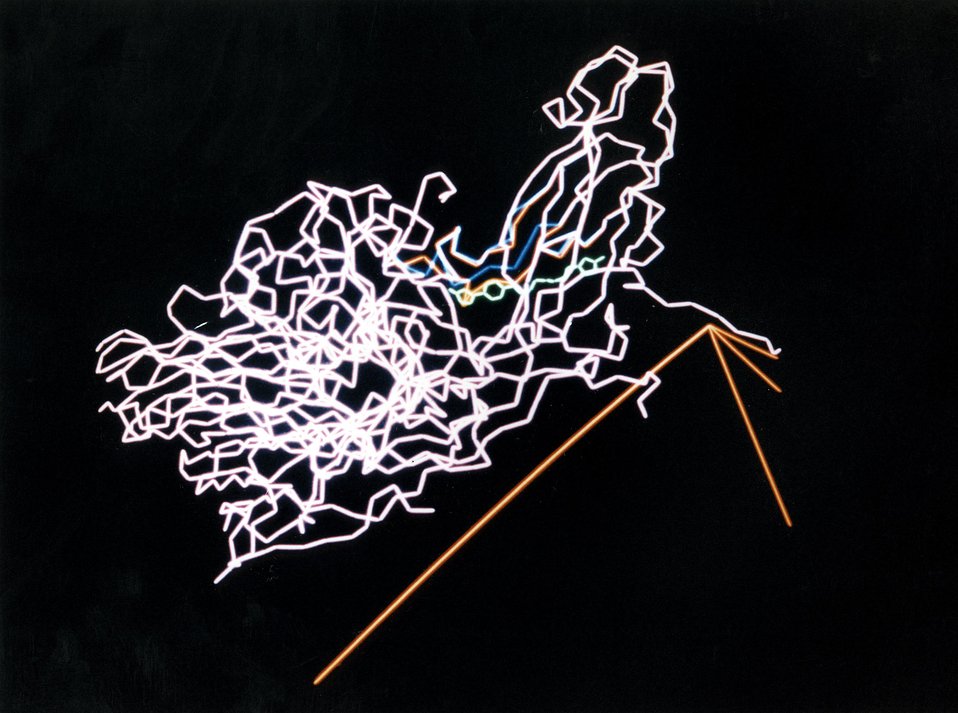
Attacking the Common Cold. A compound with demonstrated antiviral properties is shown here bound within a cleft at the canyon floor, thus inducing a structural change in the virus itself. This structural shift, from blue to red in this computer-generated image, inhibits viral 'uncoating,' a necessary step if the virus is to inject its contents into the host cell.